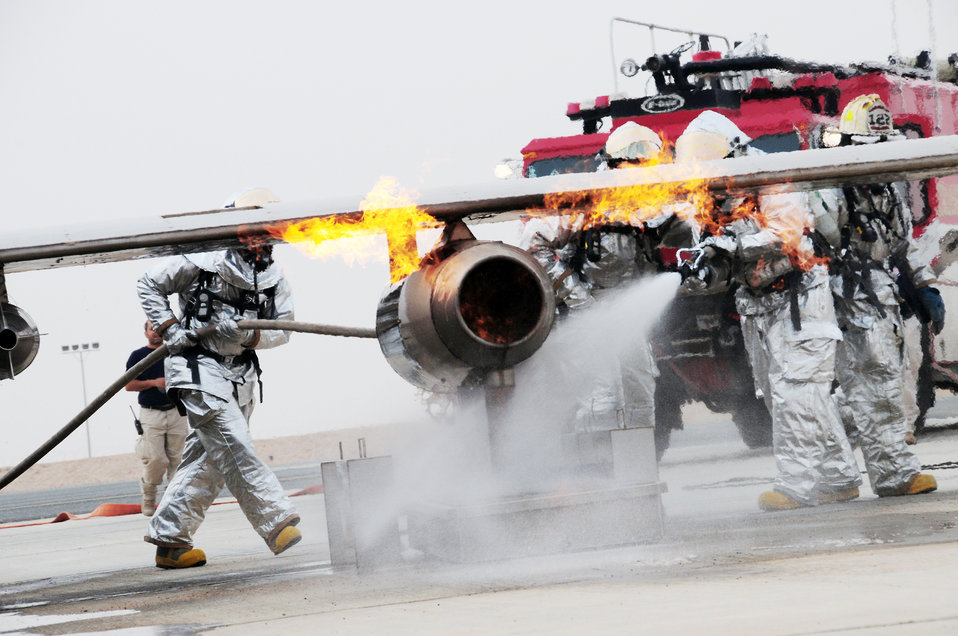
Firefighters test their skills during an annual training

Firefighters practice extinguishing an aircraft fire April 29, 2010, during fire training at an air base in Southwest Asia.